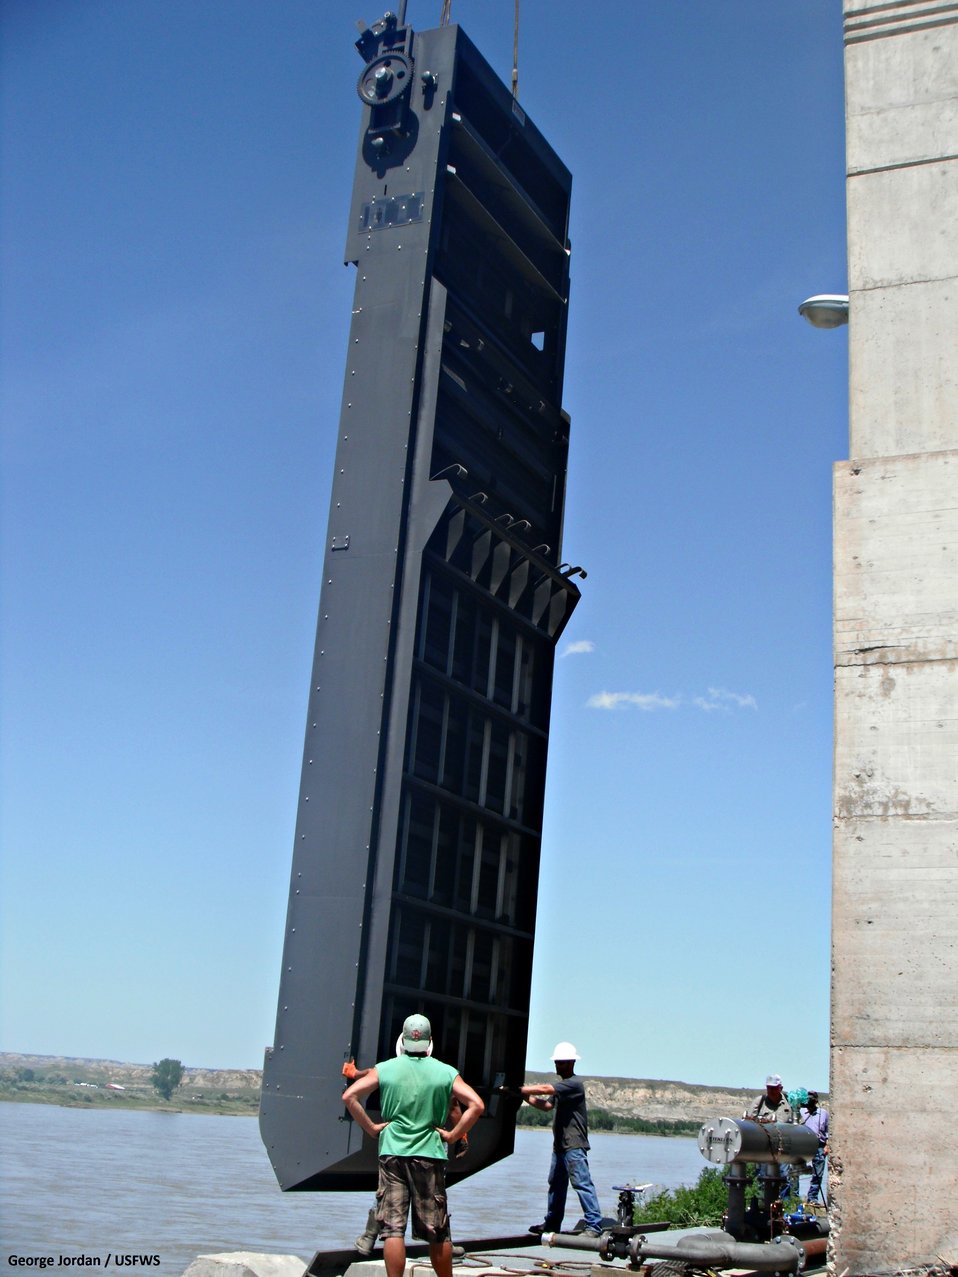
Setting the first screen

After some precarious maneuvering, the first screen is lowered into its new home.